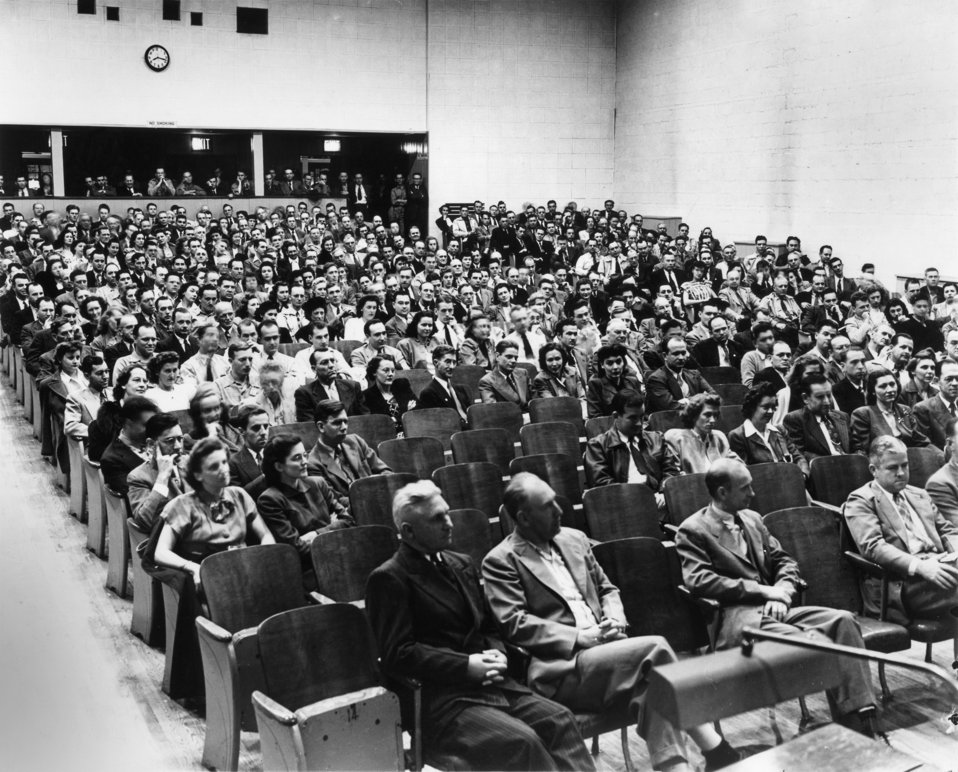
Discussing Property Tax

3387-9 DOE photo by Ed Westcott 4/7/47 Oak Ridge Tennessee